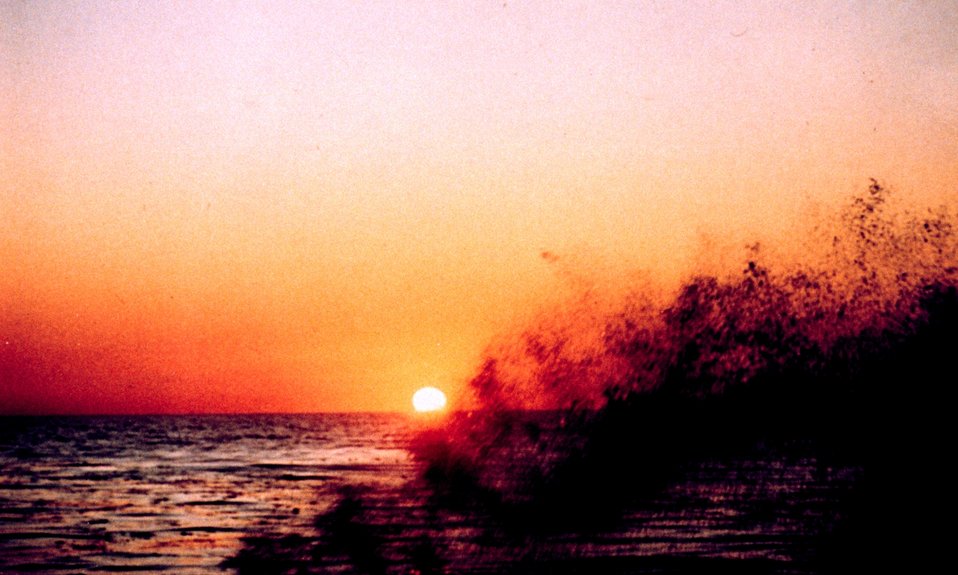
Spray flying up after surf collides with rocky shore at Soquel Point.